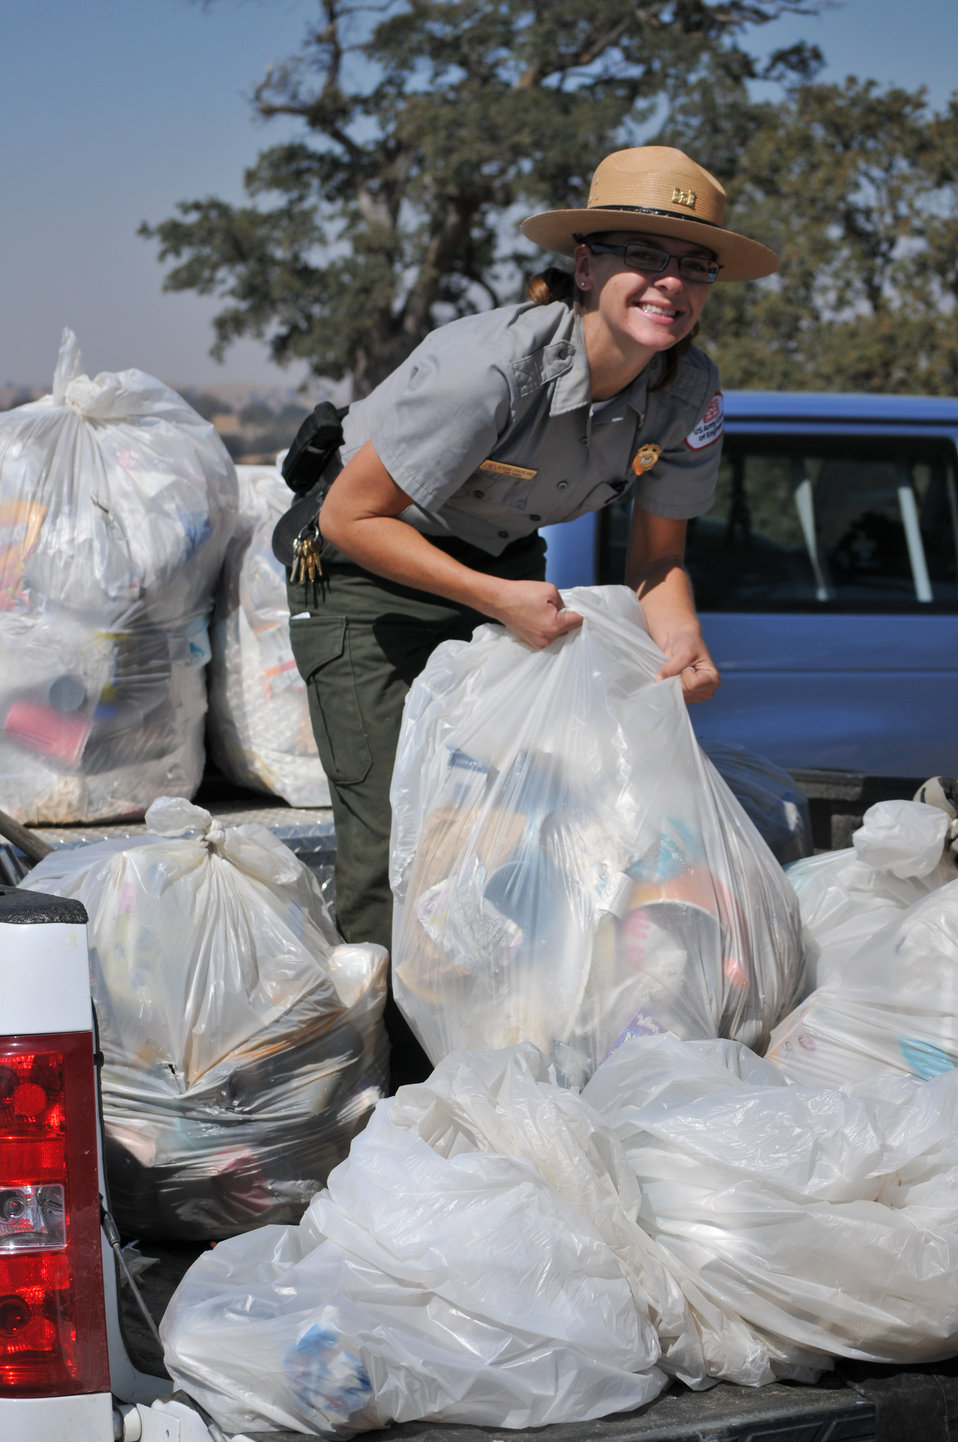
HENSLEY LAKE, Calif. (Sept. 25, 2010) – Hensley Lake park ranger Alyson Strickland unloads litter picked up by volunteers here Sept. 25 during park’s National Public Lands Day observance. More than 110 volunteers helped Hensley staff remove litter, repair trail erosion, clean the swimming beach and paint and clean signs throughout the park.